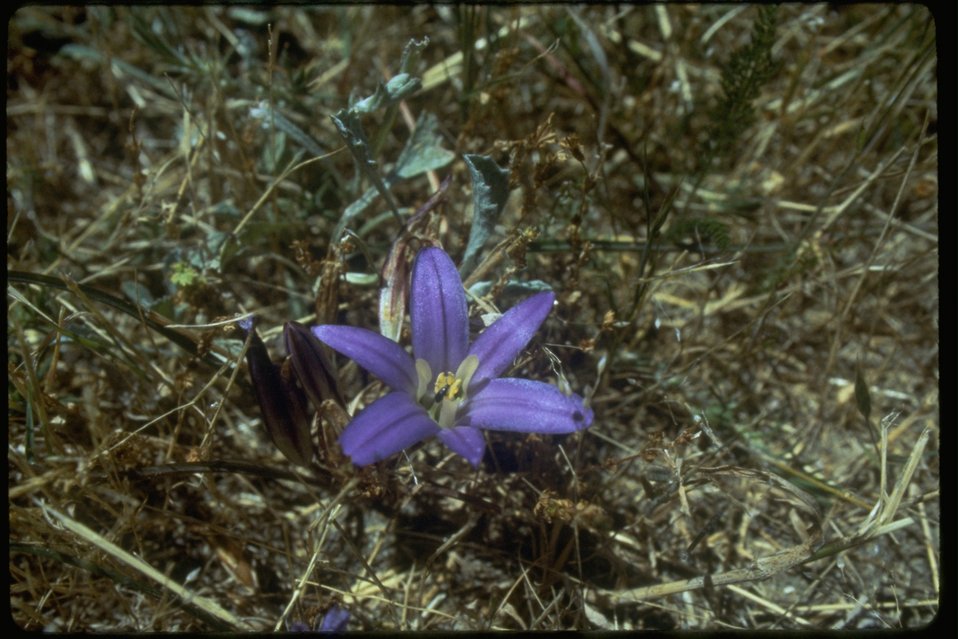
Dwarf Bradiaea (Brodiaea terestris).